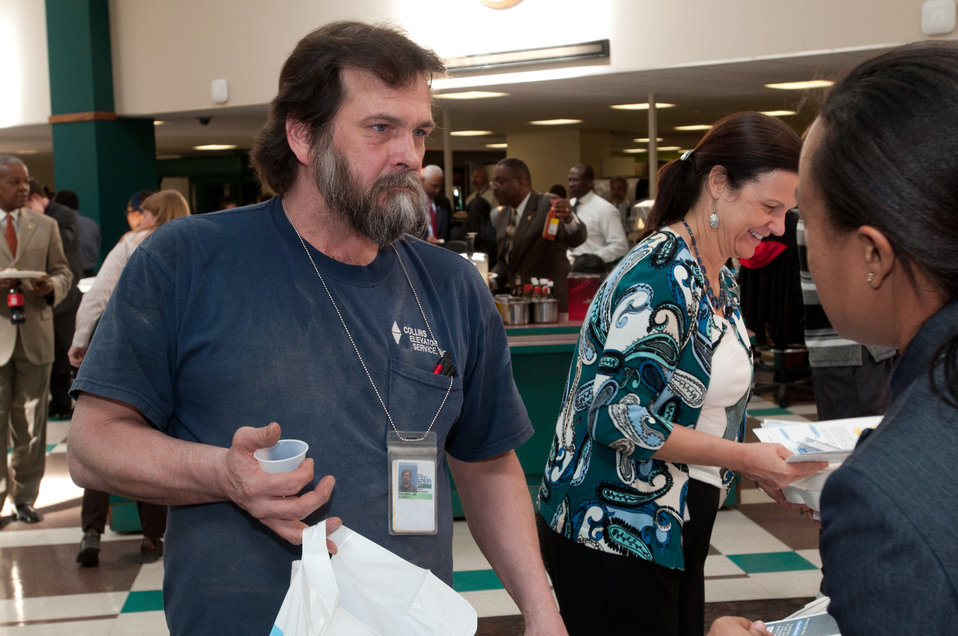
Elevator constructor Robert Golden listens to information about nanotechnology and also picked up data on self sustaining farming at the Department of Agriculture celebration of the introduction of the Dietary Guidelines for Americans 2010, an informational event for employees and the public in the Whitten Café in Washington, D.C., on Wednesday, March 2, 2011. This first Wednesday event of March, had representatives from Agricultural Marketing Service (AMS); Agricultural Research Service (ARS - including Food and Nutrition Information Center - FNIC, and Food Safety Information Center – FSIC); Economic Research Service (ERS); Food, Nutrition & Consumer Services (FNCS); Food Safety and Inspection Service (FSIS); National Institute of Food and Agriculture (NIFA); USDA Office of Operations (Departmental Management); Food and Drug Administration (FDA); and Sodexo.